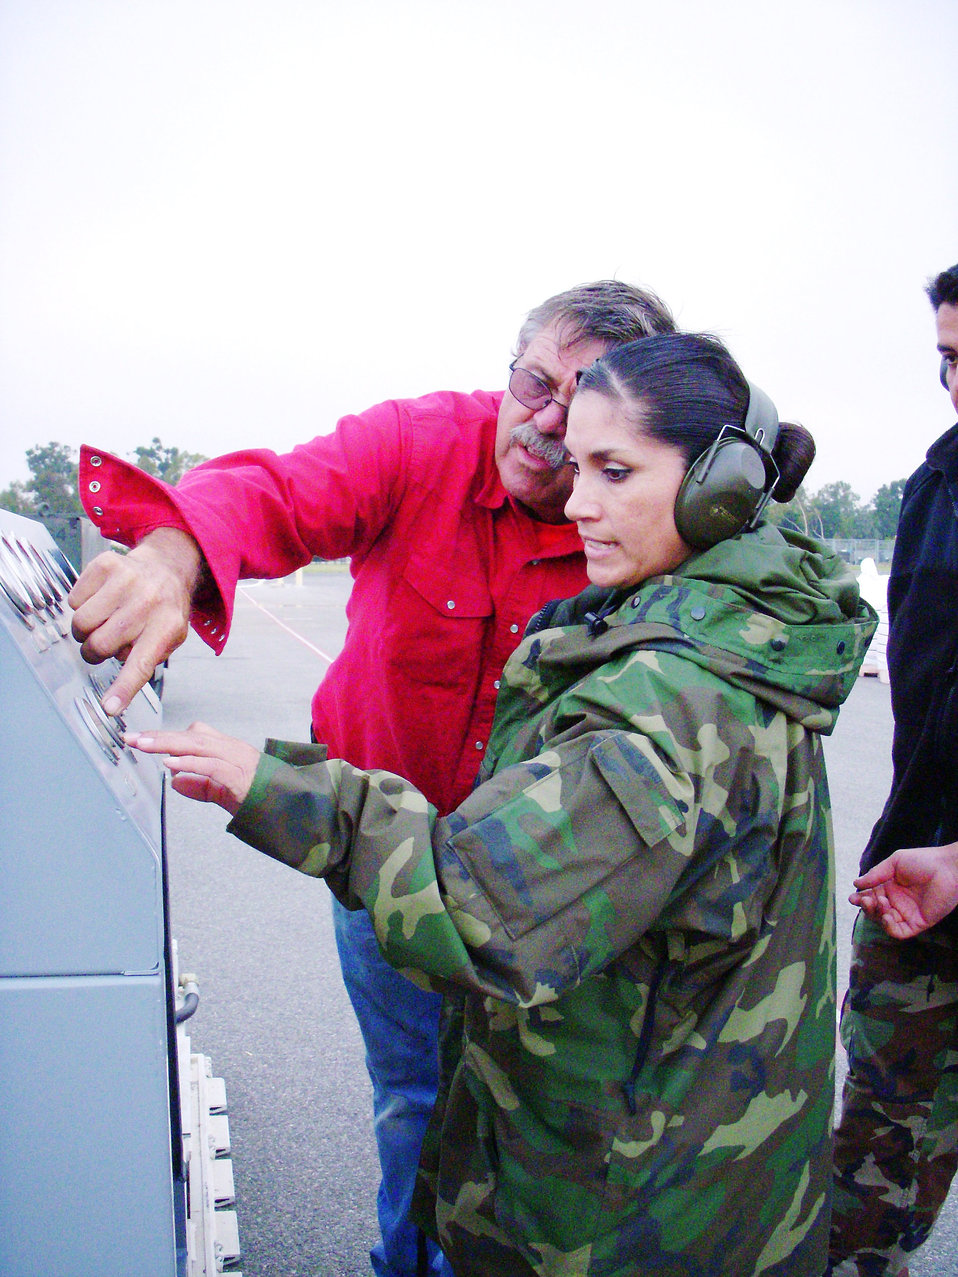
Fire retardant reload operations moved to Channel Islands

Staff Sgt. Sylvia Garcia, with the California Air National Guard's 146th Aerial Port Squadron, and Paul Wivert, a modular airborne firefighting systems mechanic, control the compressor to push air through a loading hose to force fire retardant into the MAFFS on a C-130 Hercules supporting the 302nd MAFFS fire retardant reload operations at Channel Islands Air National Guard Station.